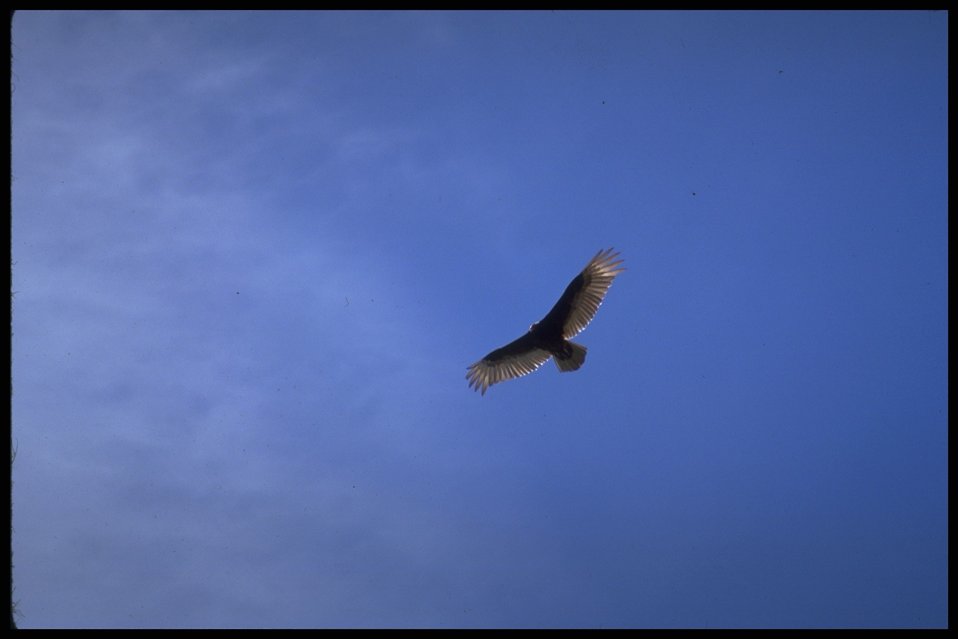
Far shot of Vulture in flight. Lakeview District.